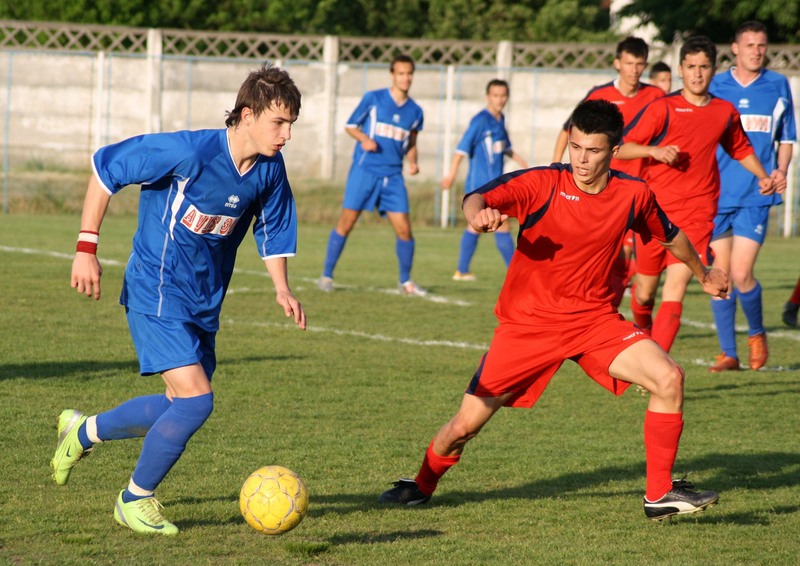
Română: CS Dacia Orăştie într-un meci de fotbal